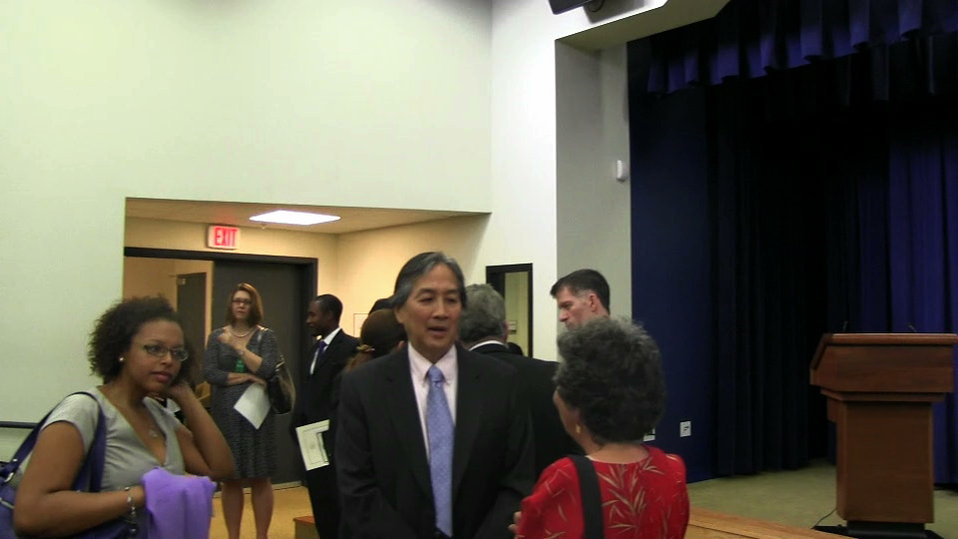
Koh2